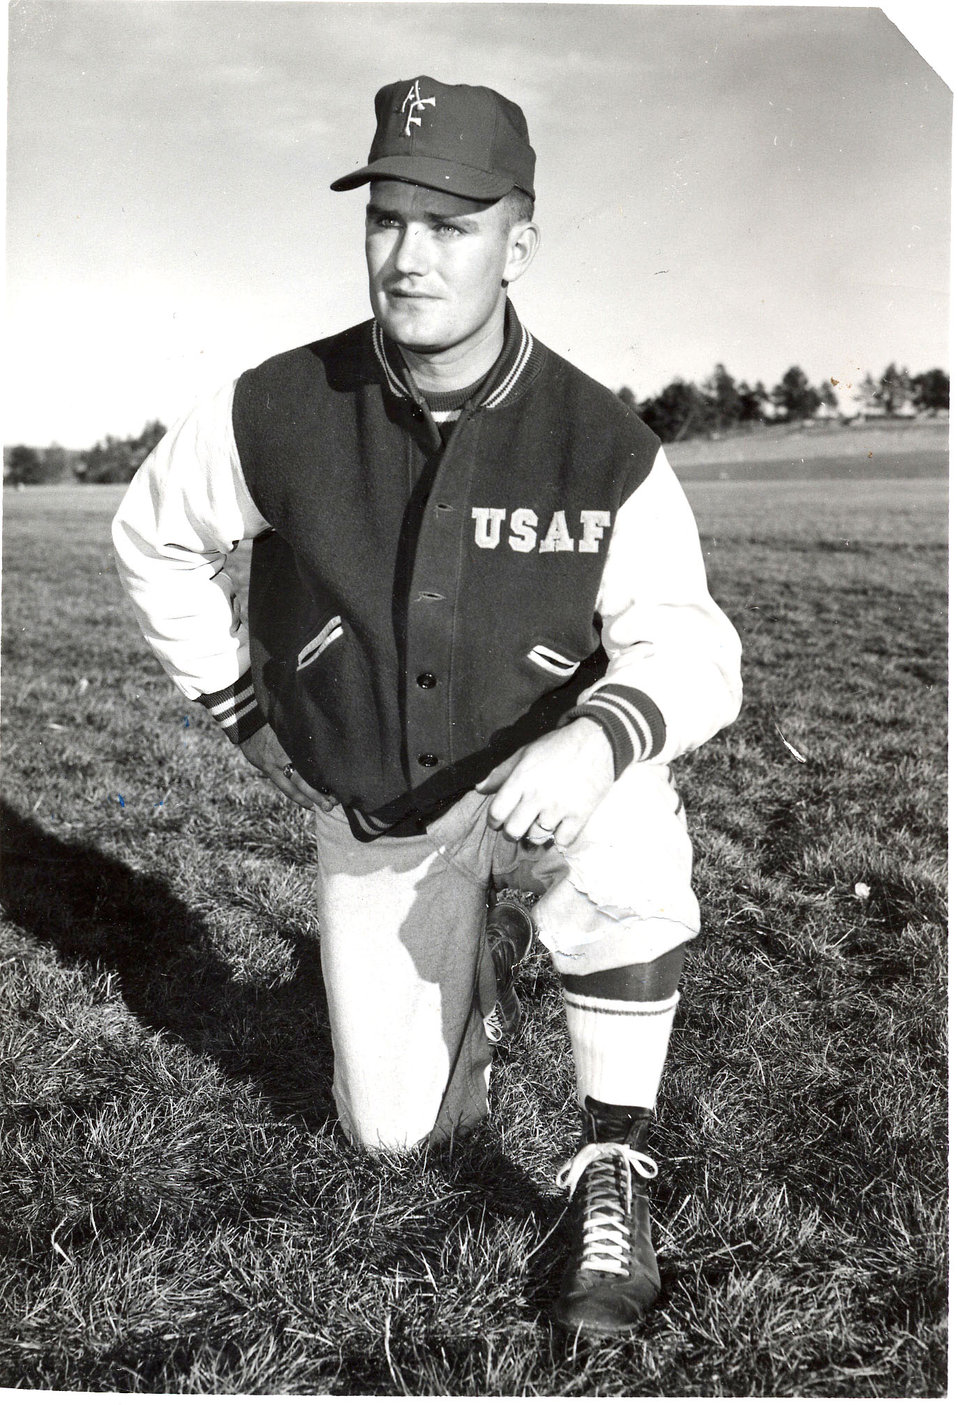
Air superiority: 48 years of Falcon football

U.S. AIR FORCE ACADEMY, Colo. -- Jim Bowman's 48-year career at the U.S. Air Force Academy included a stint as a junior varsity coach as seen in this circa 1960 photo.